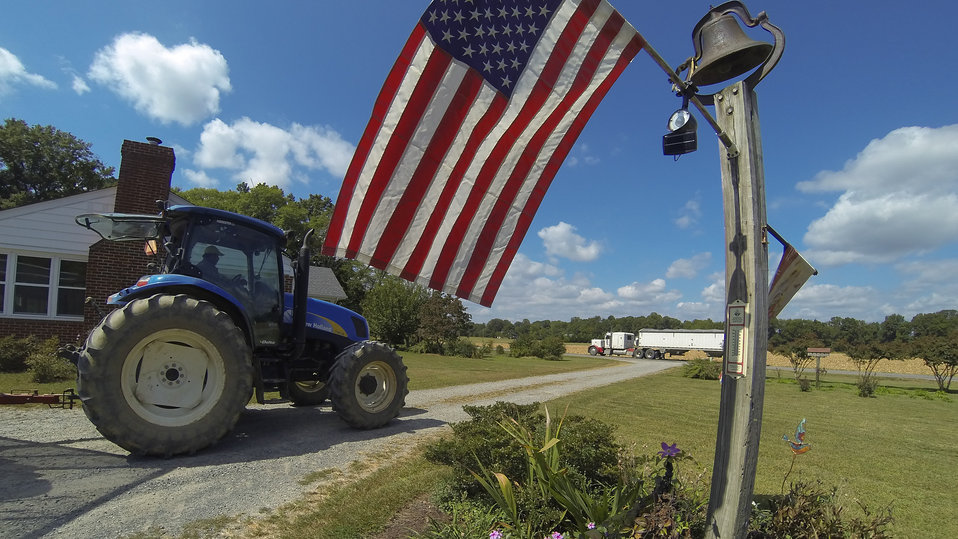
Migrant workers head back to the fields to pick squash, at Kirby Farms in Mechanicsville, VA on Friday, Sept. 20, 2013. Kirby Farms devotes 200 acres of the farm to eggplant, spinach, beets, tomato, jalapeno peppers, melons and a variety of greens. Soybeans and small grain are grown on the remaining 300 acres. The fertile Virginia soil and their management practices, allows Kirby Farms to double and triple crop fields with rotational crop selection. Wholesalers, who buy from this farm, sell the produce to major supermarkets in the Mid-Atlantic region, from North Carolina to Maryland. Restaurants in the local area prepare and serve their harvest to patrons in the Greater Richmond, VA Region.